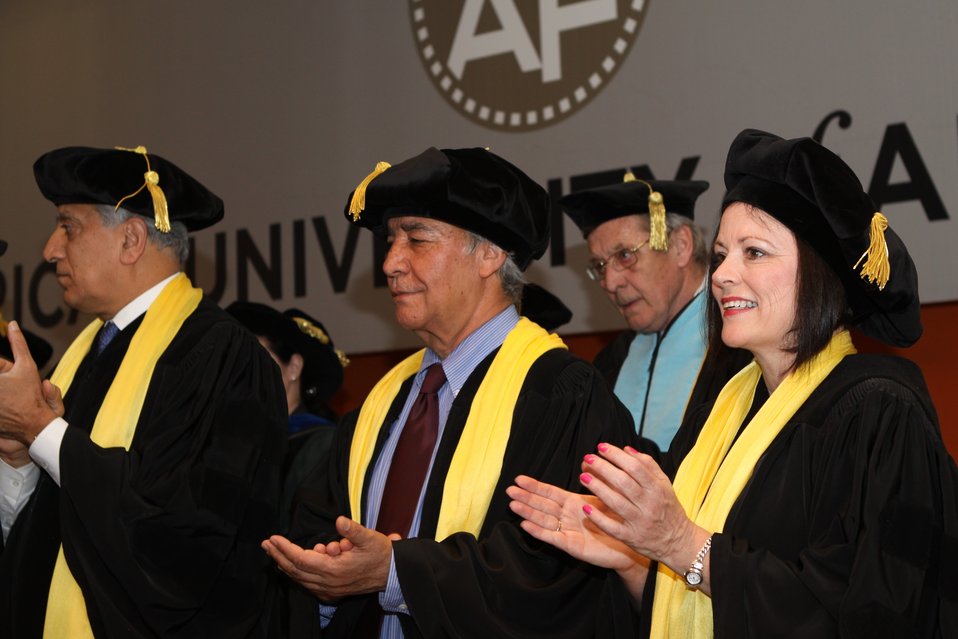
100526 AUAF Graduation 134